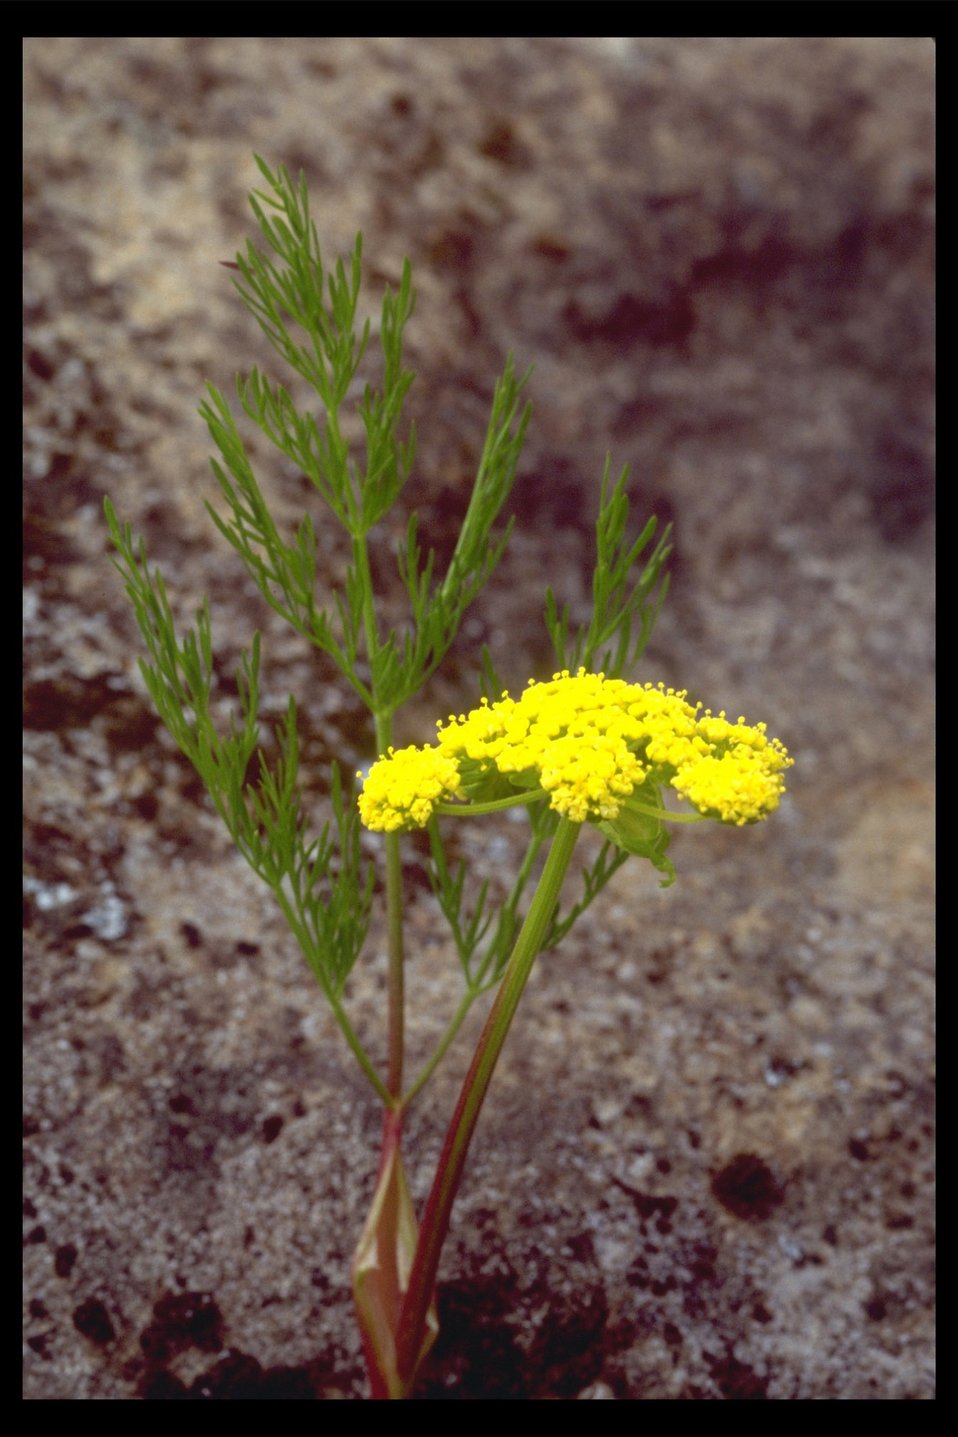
Desert Parsley, Lomatium (Lomatium dissectum) at Upper Table Rock.